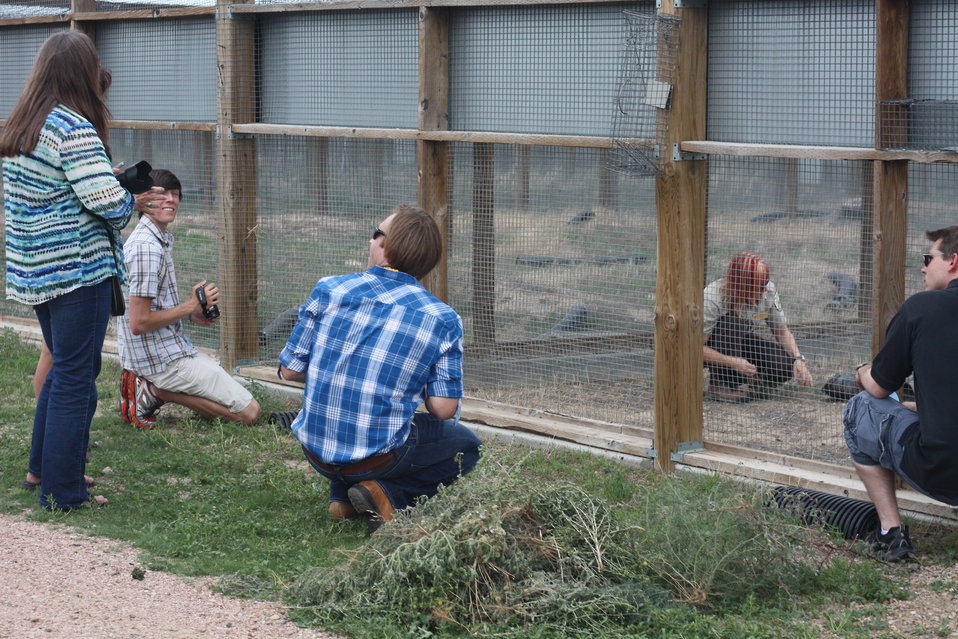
Interns visit the NBFFCC

In the summer of 2012, USFWS Region 6 interns visited the National Black-footed Ferret Conservation Center (NBFFCC) in Colorado to learn how the program reintroduces the endangered Black-footed ferret back into its native habitat.

Pictured here, Kimberly Tamkun and Robyn Bortner (NBFFCC Employees) show the outdoor preconditioning pens to Ryan and the interns.